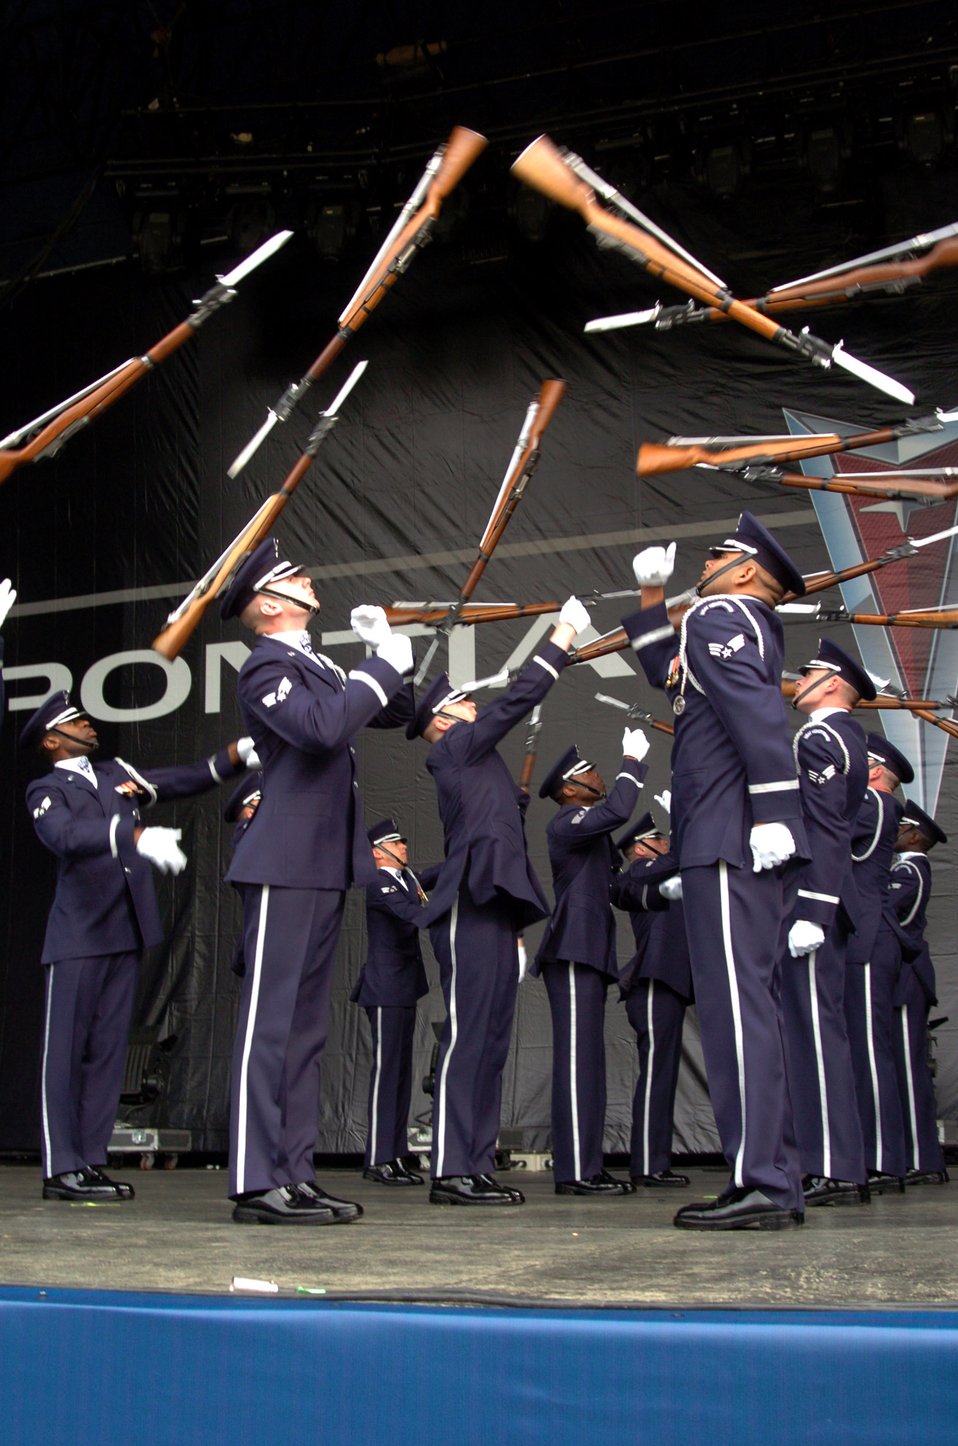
Air Force featured at Final Four

The U.S. Air Force Honor Guard Drill Team performs precision movements with M-1 rifles with fixed bayonets during their performance at the National Collegiate Athletic Association Final Four pep rally at Centennial Olympic Park March 31 in Atlanta. The NCAA featured the Air Force as part of its Final Four celebration to highlight the service of the men and women in uniform to the United States.